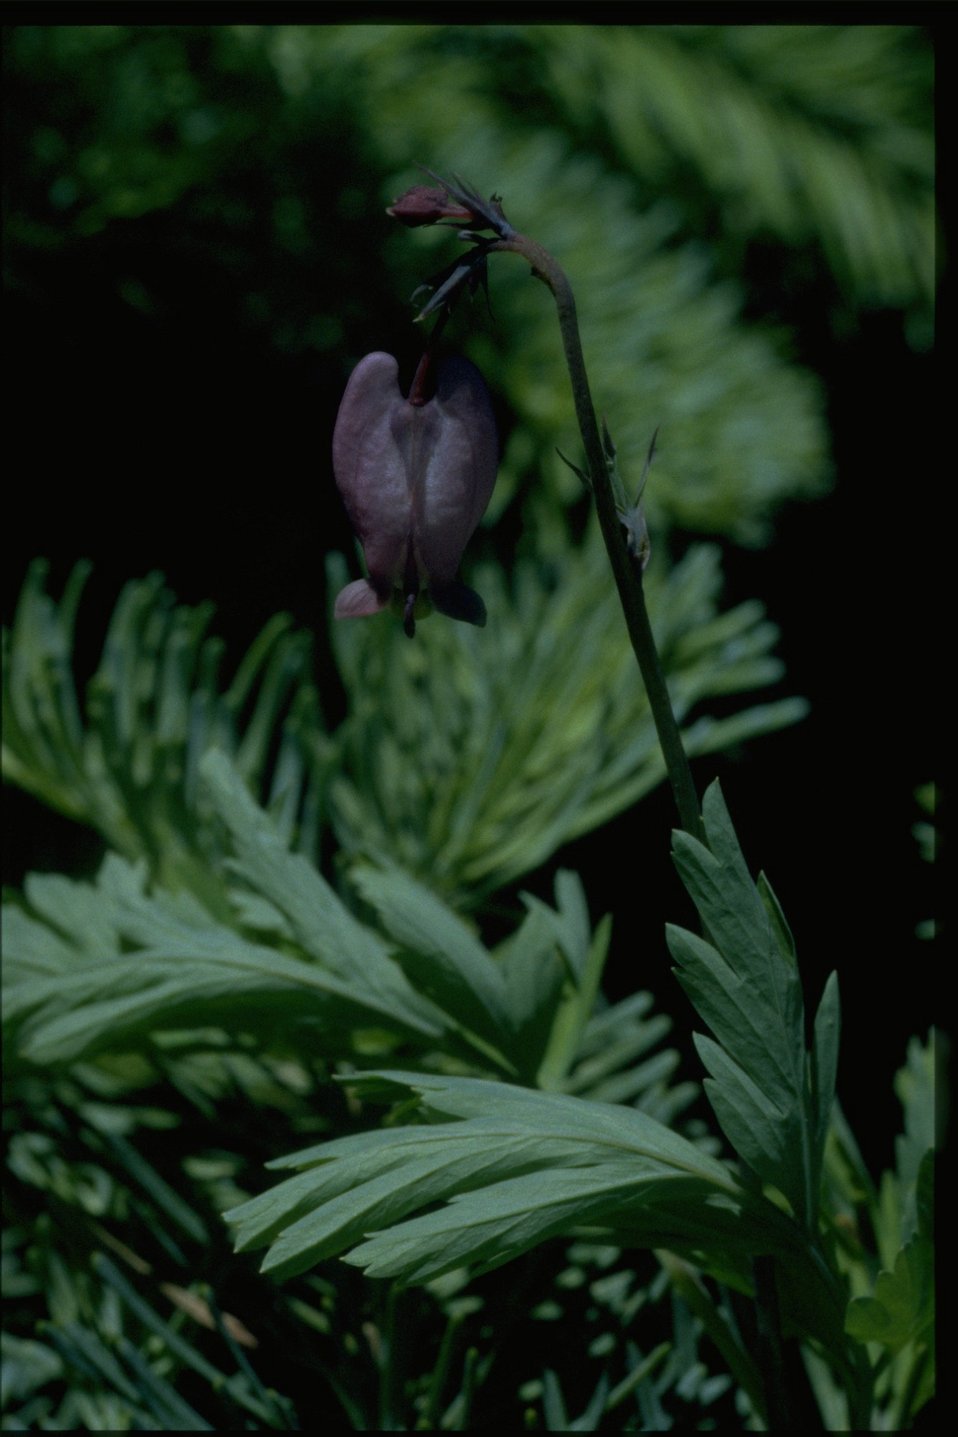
Medium shot of Dicentra formosa.